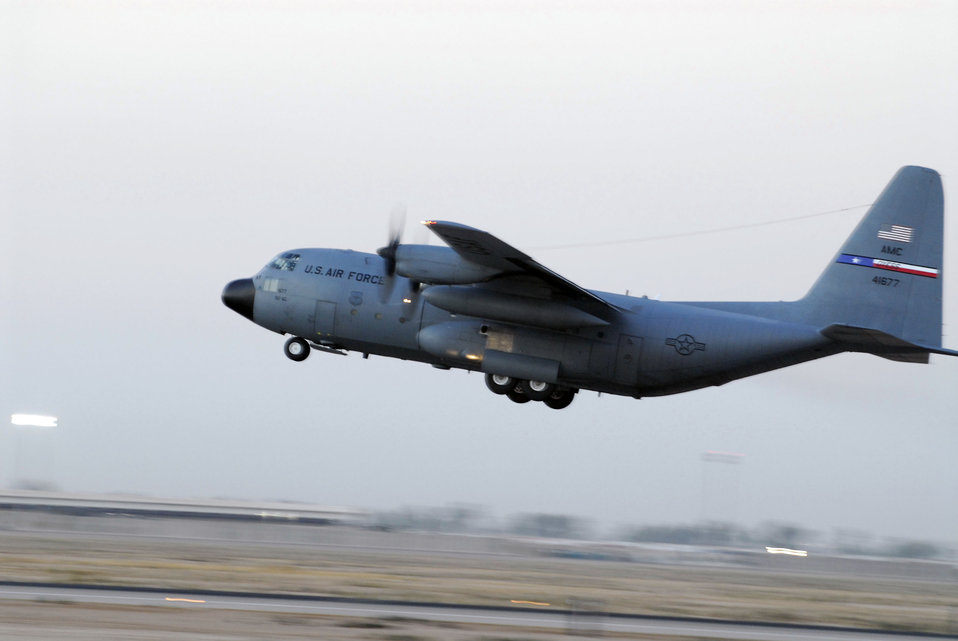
Nov. 10 airpower summary

A C-130 Hercules from the 777th Expeditionary Airlift Squadron takes off at Balad Air Base, Iraq, Nov 11. The C-130 performs a variety of missions from transporting cargo and personnel to providing an airborne command post.